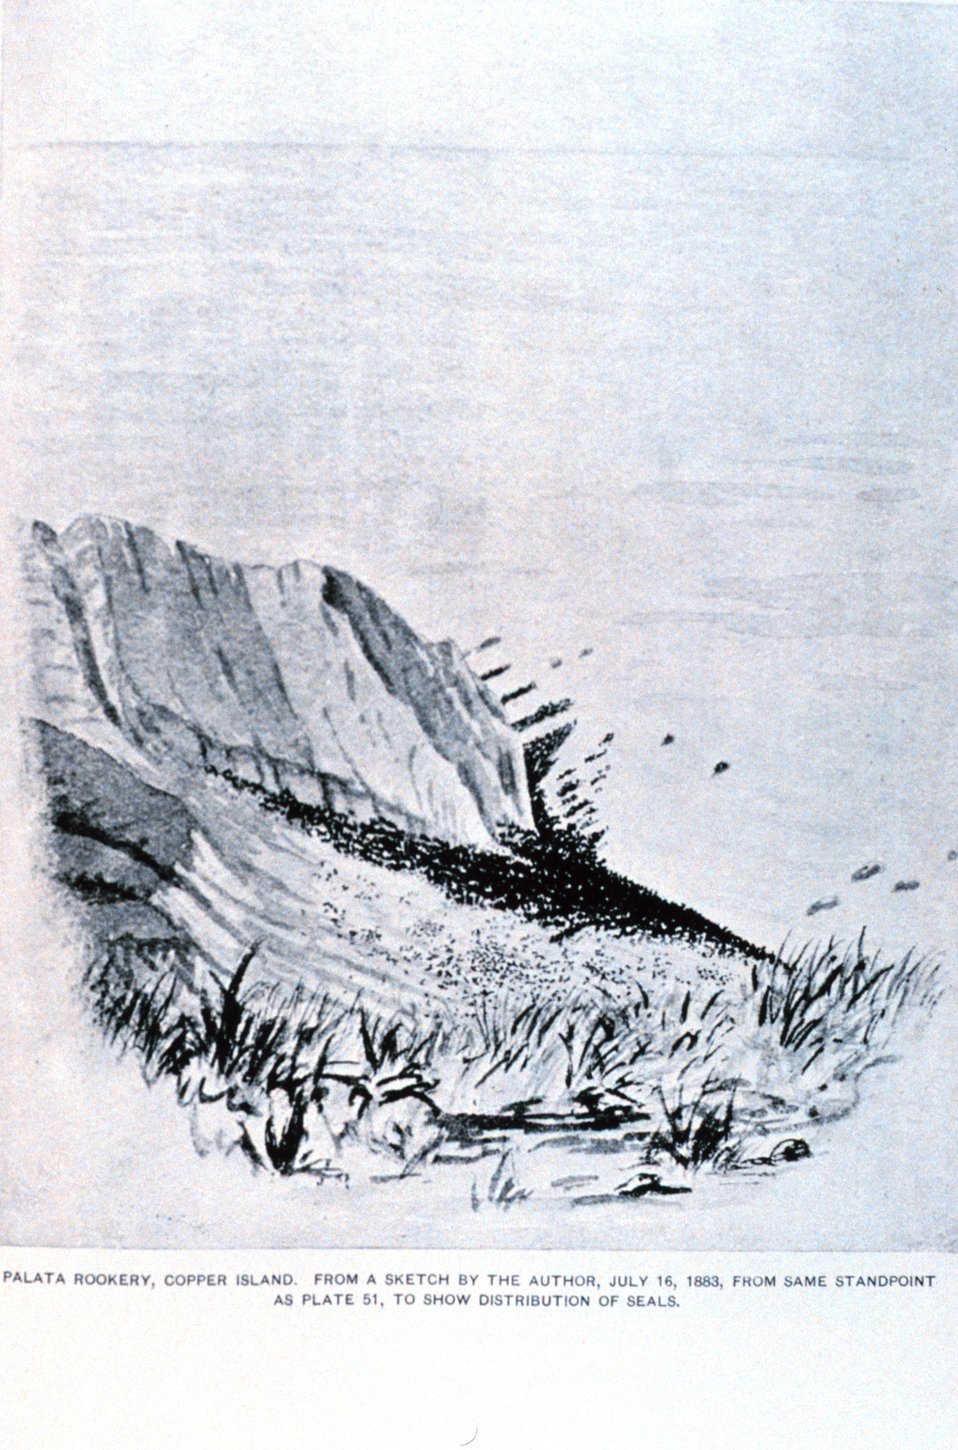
Palata fur seal rookery from a sketch